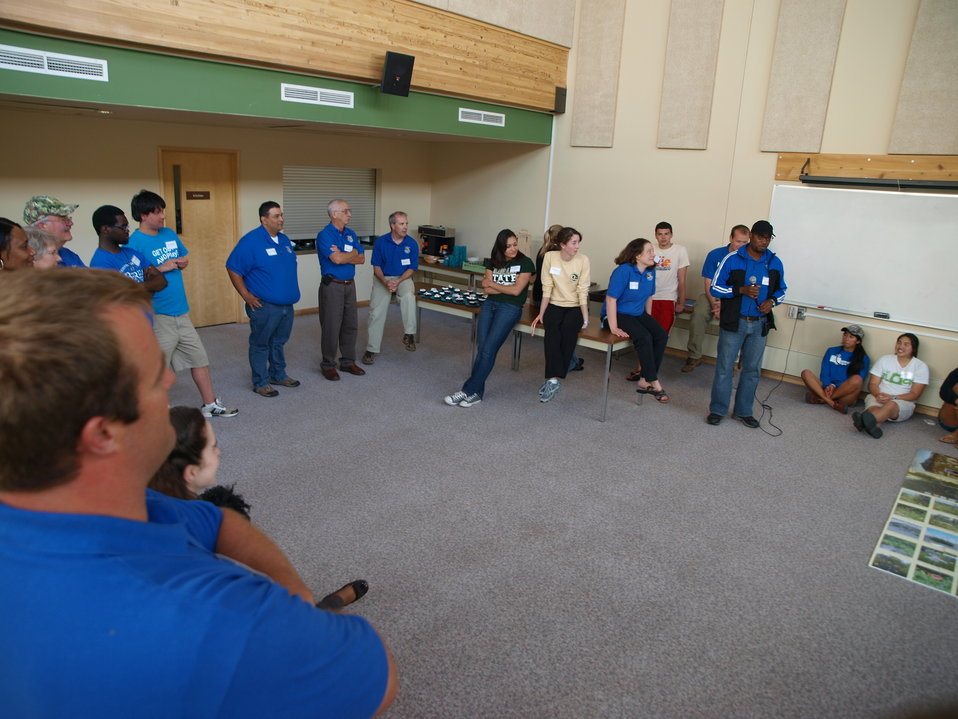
CDIP 2012 Fergus Falls

Wes addressing the interns